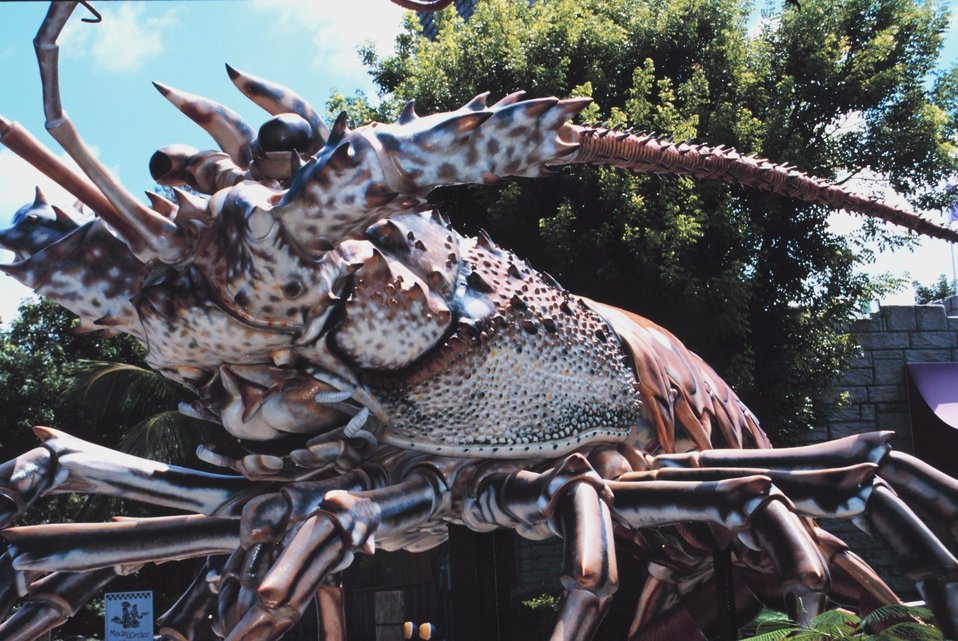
A giant spiny lobster is an attraction at Treasure Village